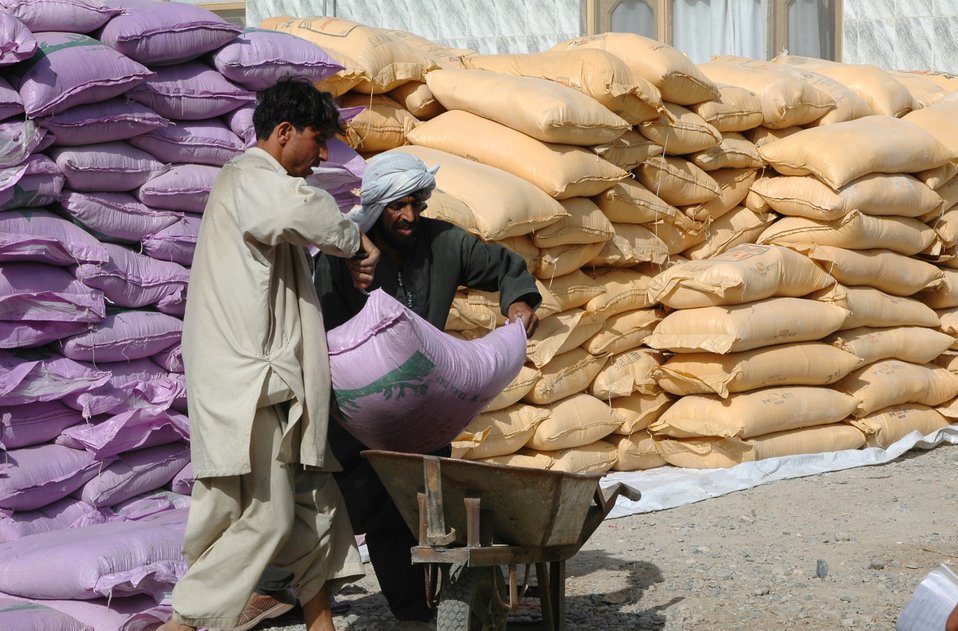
Dr Shah Visits Argandab April 10, 2010